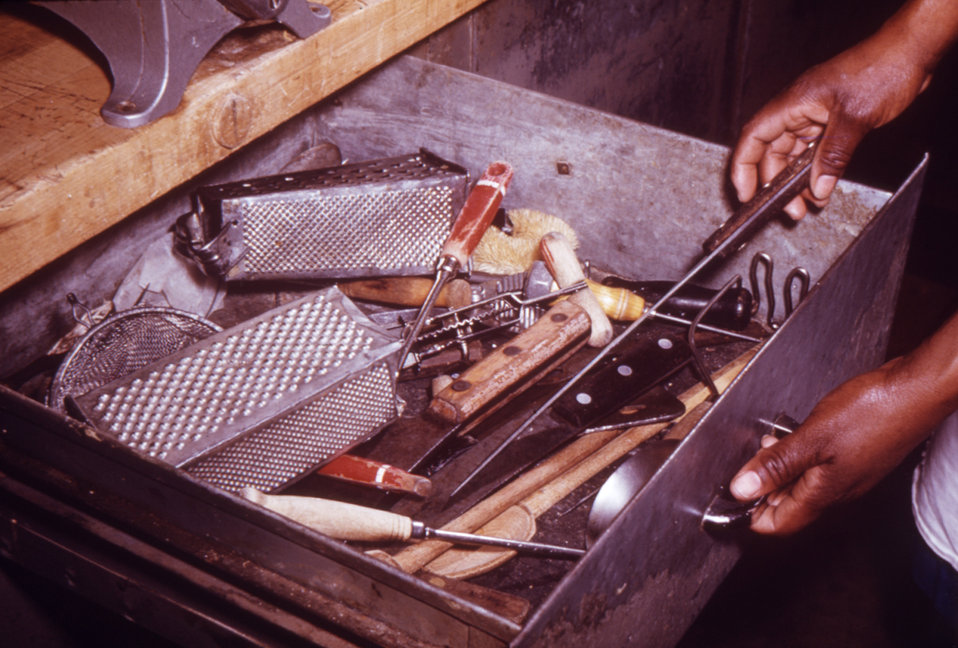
This image reveals how improperly stored sharp cooking utensils can cause bodily harm to food preparation workers.